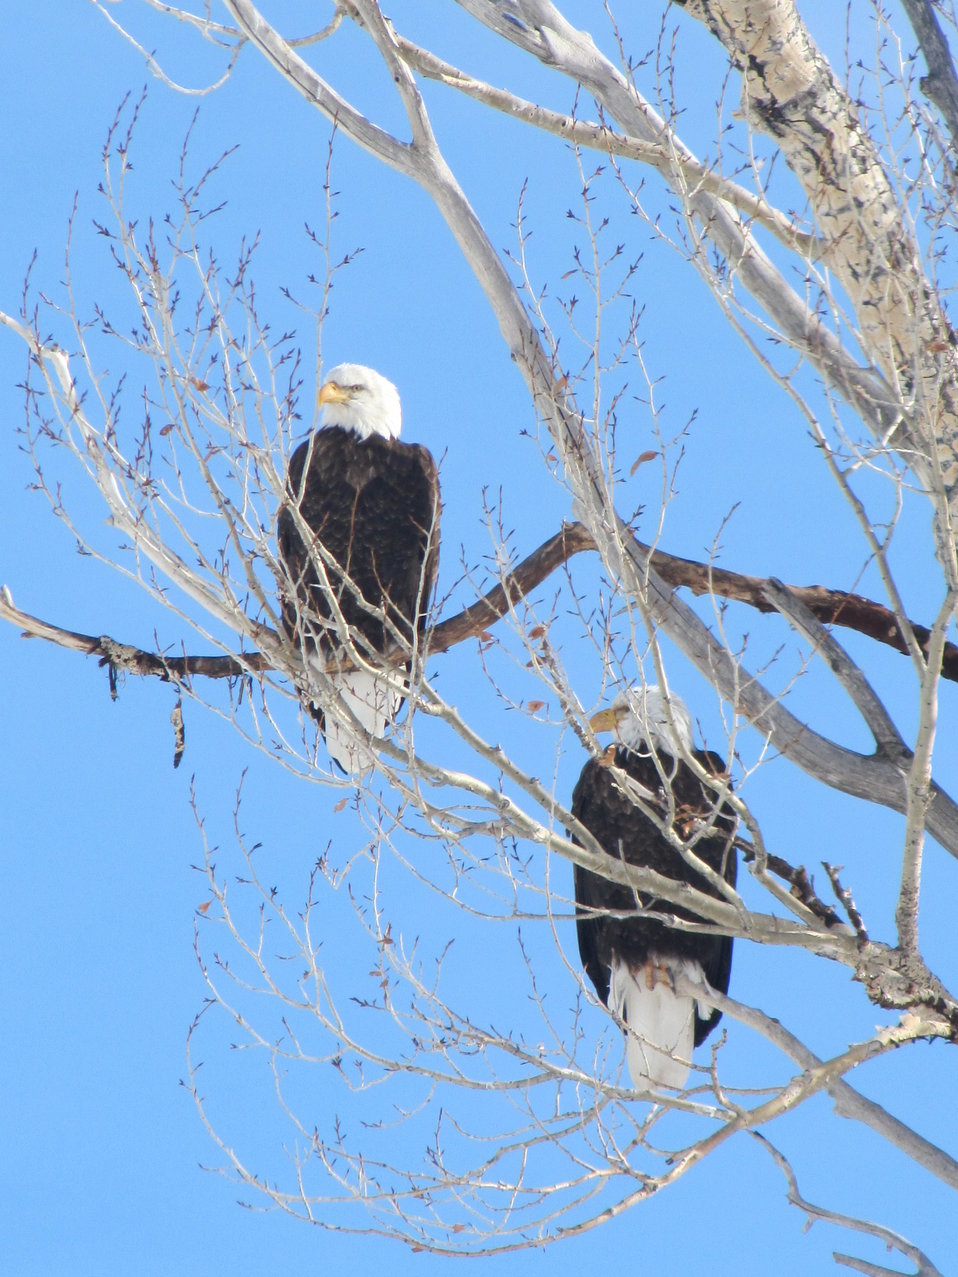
A Cottonwood Perch

Two eagles sit in a cottonwood tree along Flat Creek on the National Elk Refuge.